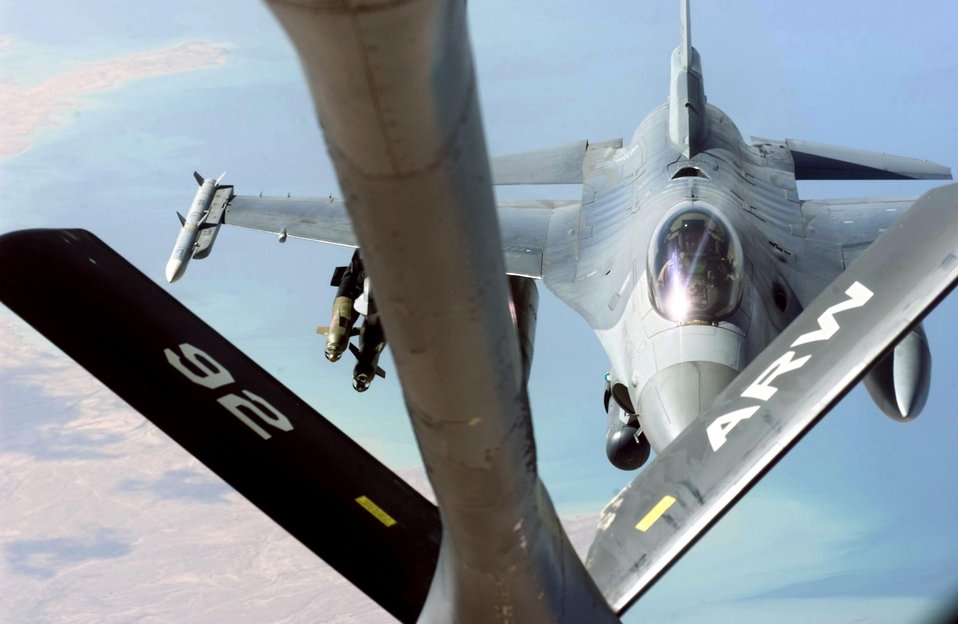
Triple nickel fighter refuels

OVER IRAQ - Preparing to refuel, an F-16 Fighting Falcon pilot from the 555th Fighter Squadron at Aviano Air Base, Italy, settles into position behind a KC-135 Stratotanker from the 92nd Air Refueling Squadron at Fairchild Air Force Base, Wash.